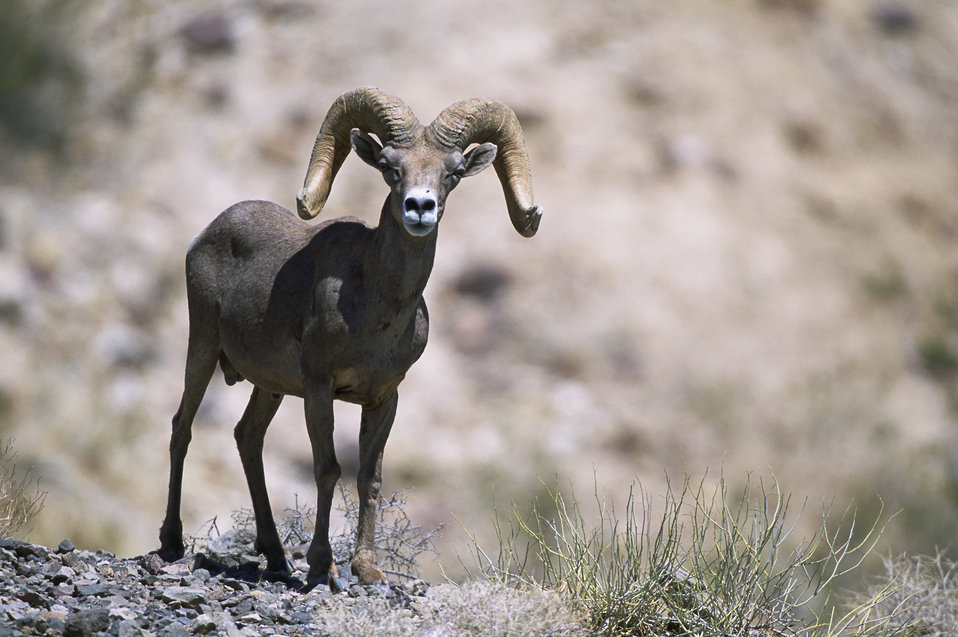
Bighorn sheep

Close view of male bighorn sheep standing in dried vegetation and rocks. Resource links: http://www.fws.gov/bisonrange/